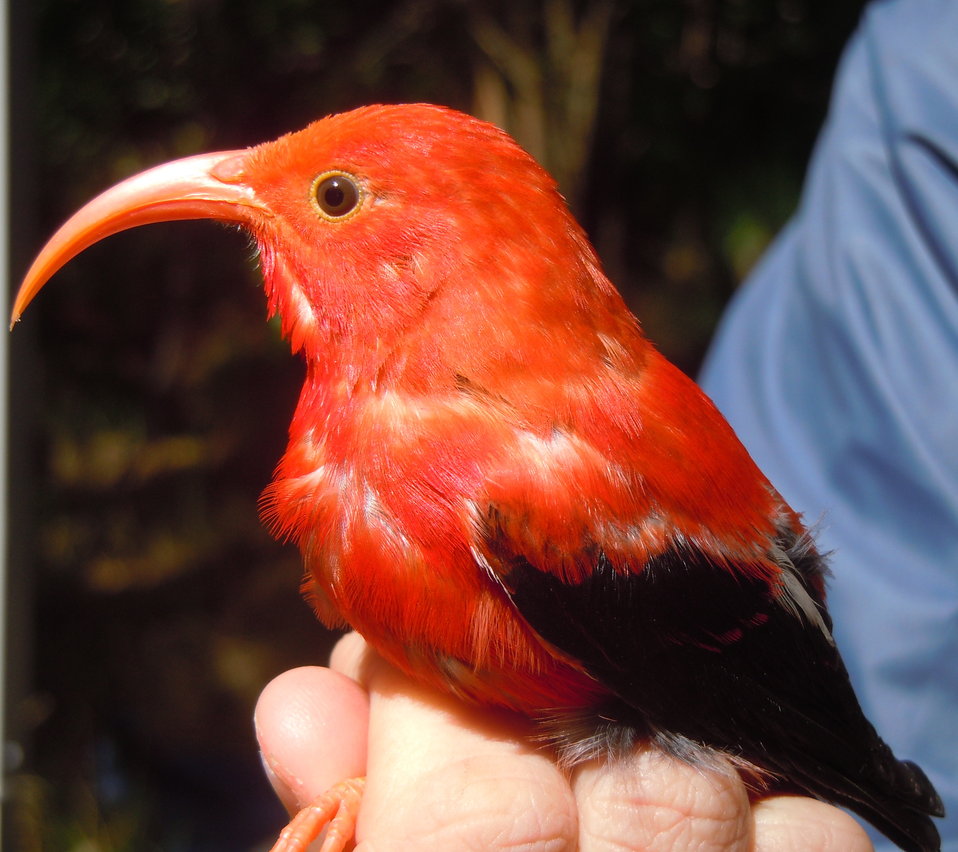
adult 'i'iwi

The endangered 'i'iwi is one of the Hawaiian honeycreeper species. They evolved in the forests of Hawai'i and are found nowhere else in the world. This bird was banded and released back to the forest.
Hakalau Forest National Wildlife Refuge, HI
March 2012